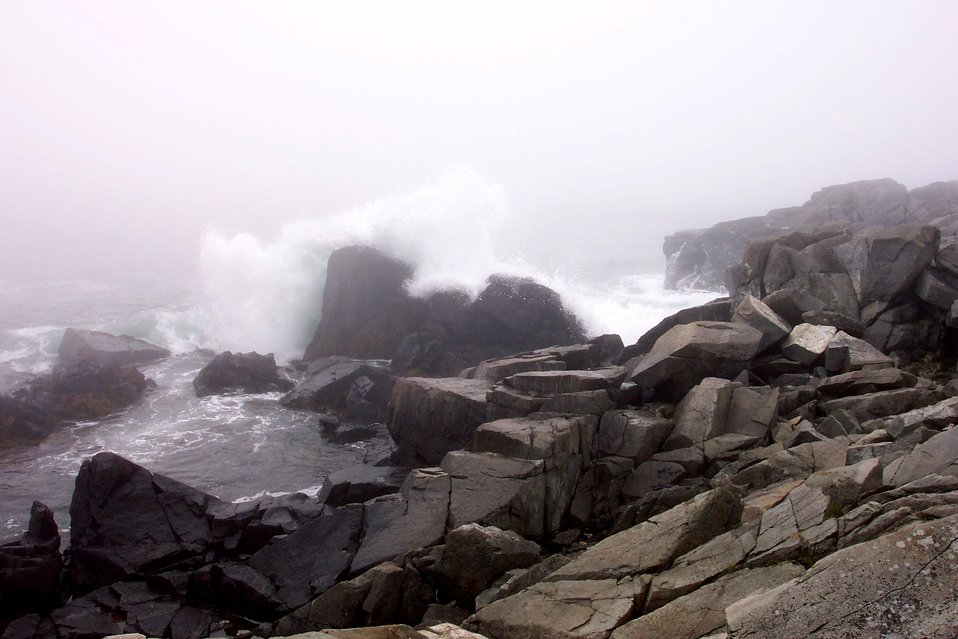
Rock, spray, and fog.